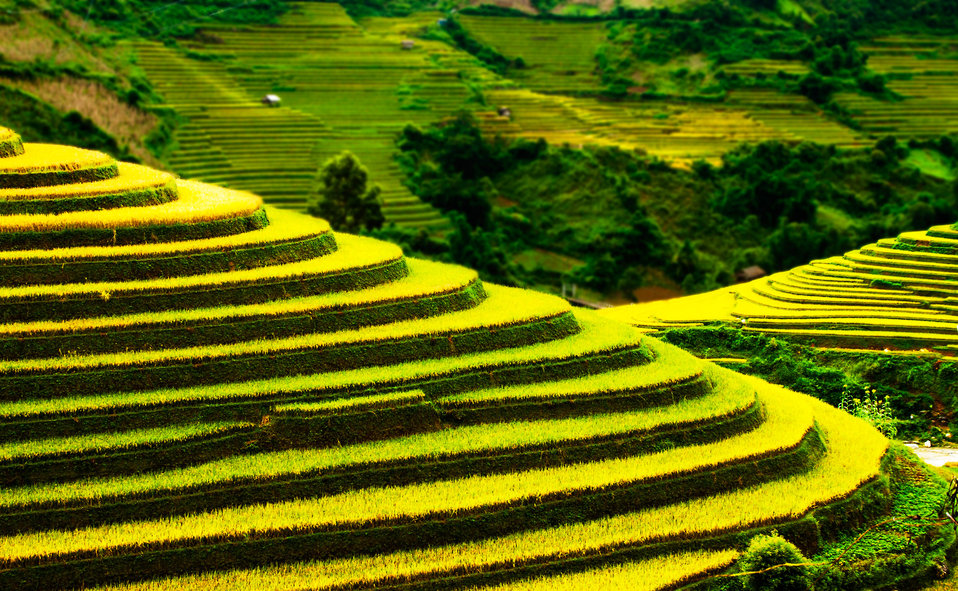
The season

Terraced fields in mu cang chai district, yen bai province, vietnam's northwest.